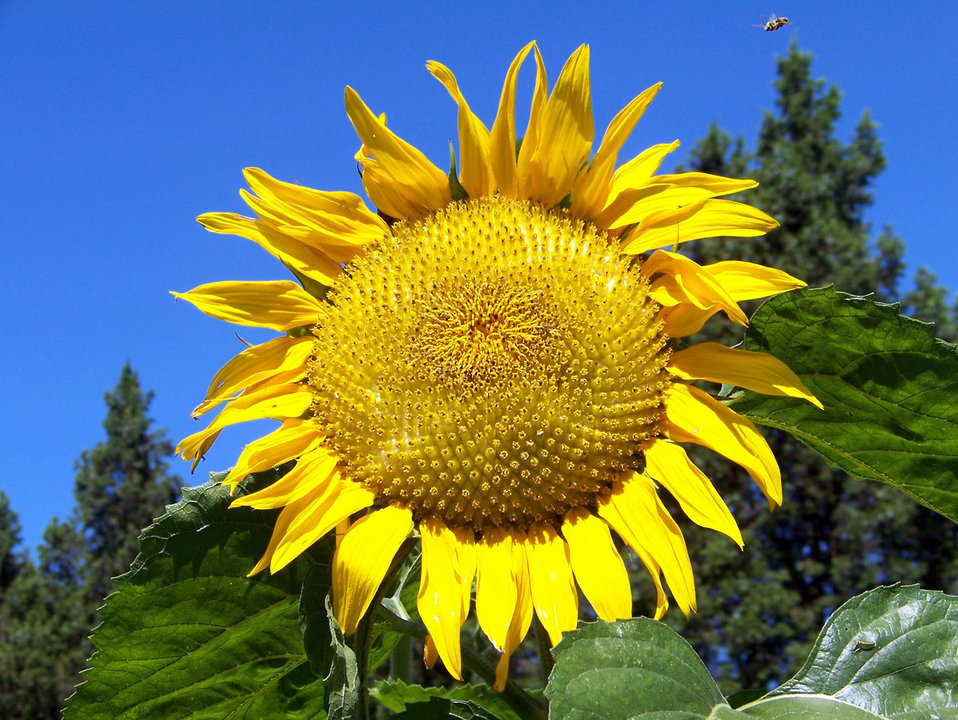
Sunflower

Yellow sunflower with bee approaching.